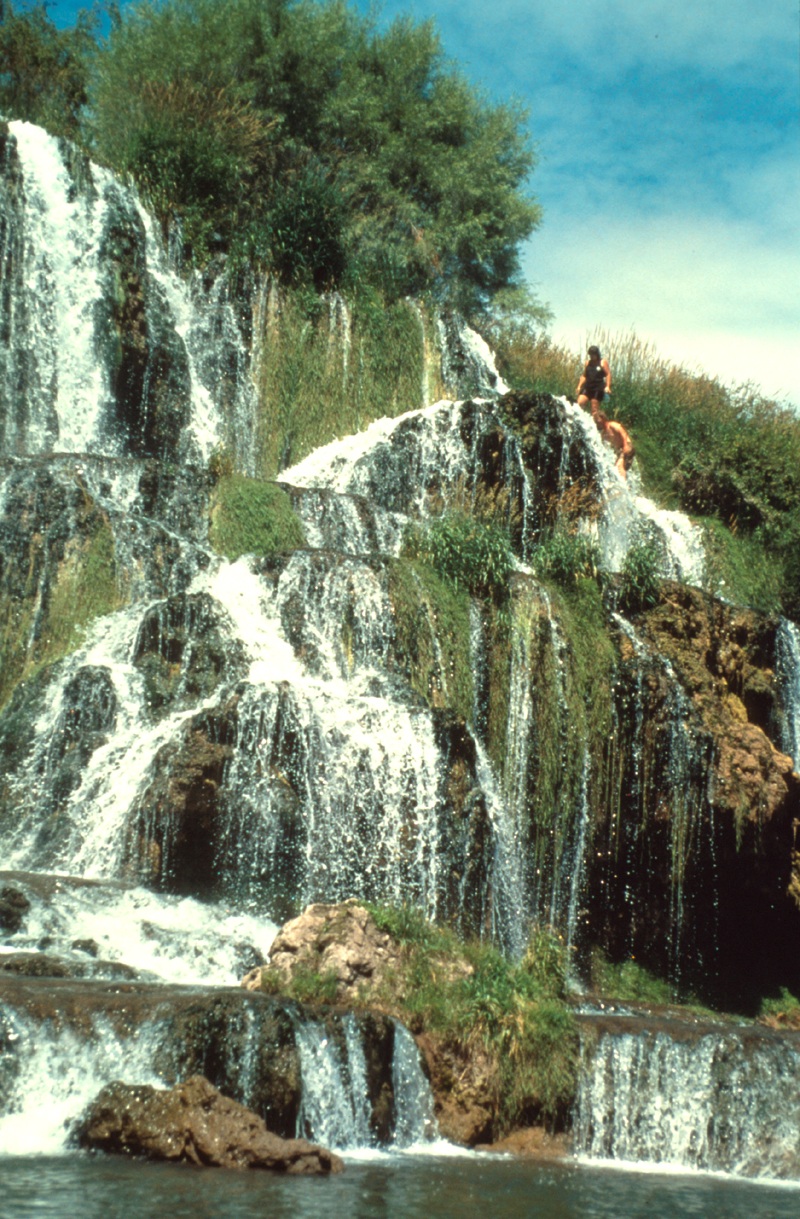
Fall Creek Falls Snake River Canyon